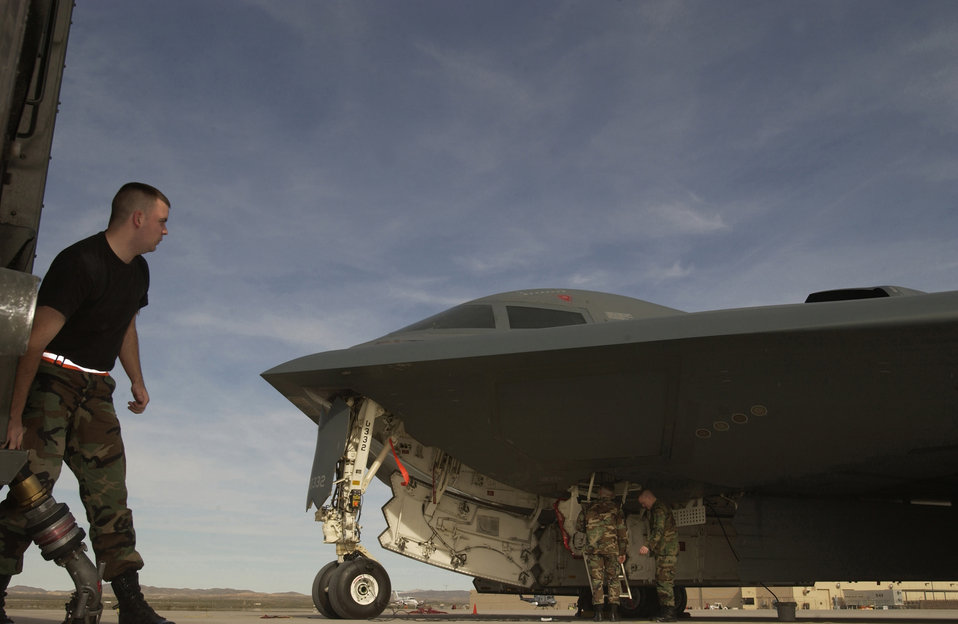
Fueling the Spirit

NELLIS AIR FORCE BASE, Nev. -- Senior Airman Kenneth Woods prepares to drag a fuel hose to refuel a B-2 Spirit bomber here March 1. Airman Woods is a fuel truck operator assigned to the 99th Logistics Readiness Squadron here and the B-2 is assigned to the 509th Bomb Wing at Whiteman AFB, Mo.